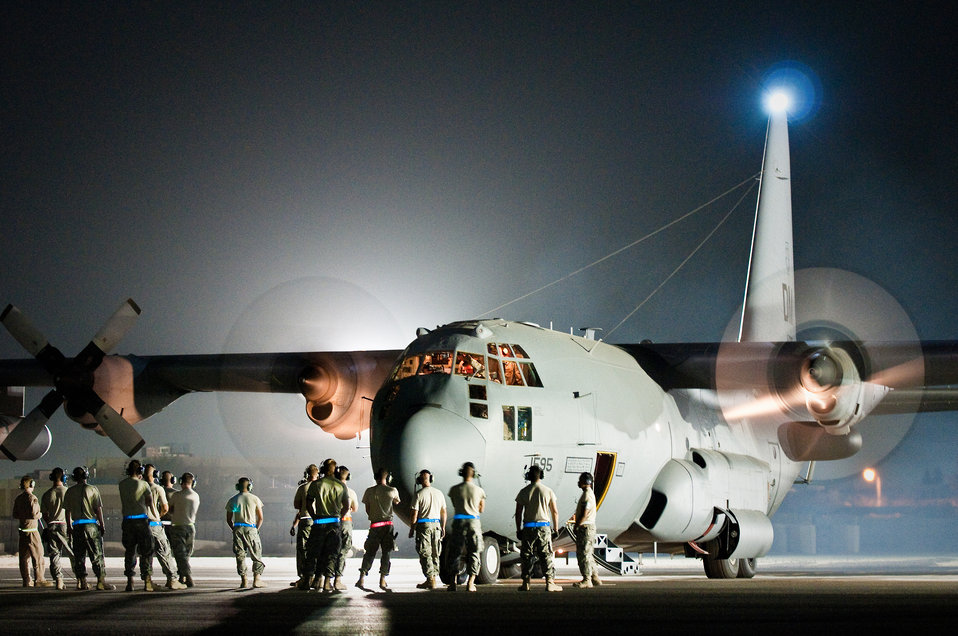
EC-130H Compass Call

Maintenance troops and aircrew members prepare anEC-130H for its final departure Aug. 29, 2010, in Southwest Asia. The plane's unit, the 43rd Expeditionary Electronic Combat Squadron, has been part of the 386th Air Expeditionary Wing for 6.5 years and is moving to another base in the U.S. Central Command area of responsibility because of the responsible drawdown of forces in Iraq. The EC-130H provides U.S. forces with the ability to jam enemy communications.